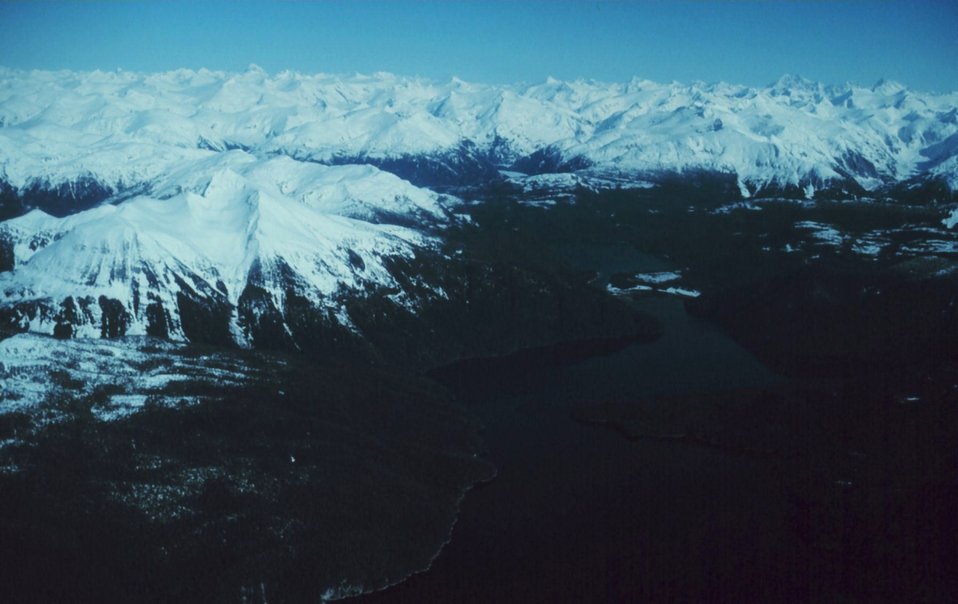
Port Houghton, North Arm